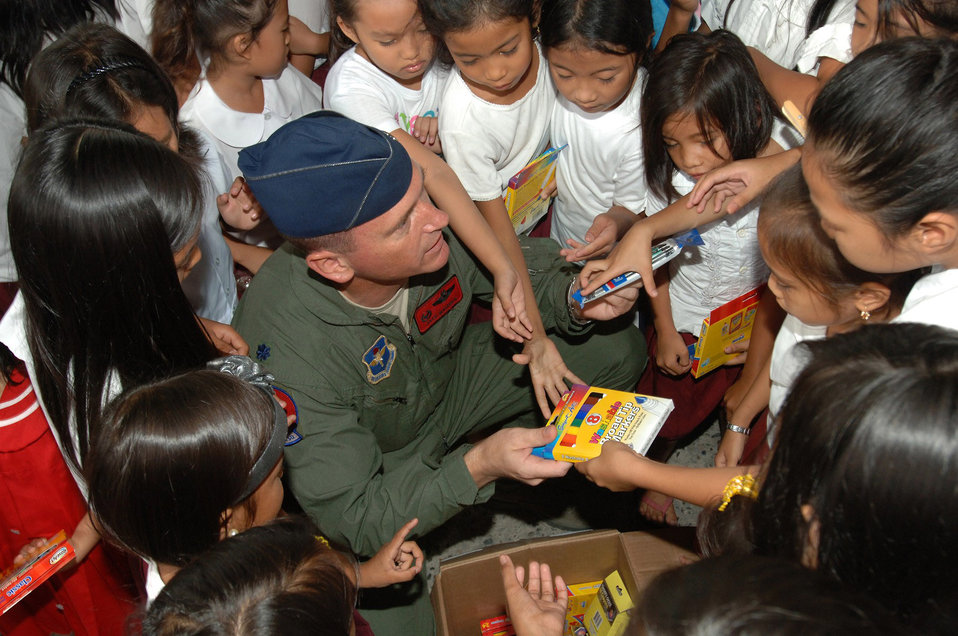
Airmen spread goodwill during Balikatan 2009

Lt. Col. Jack Maixner hands out school supplies to Filipino children at the Sapangbato village community center as part of a volunteer community relations event held April 24 and 25 at Angeles City, Philippines. Colonel Maxiner is the 63rd Fighter Squadron commander at Luke Air Force Base, Ariz.